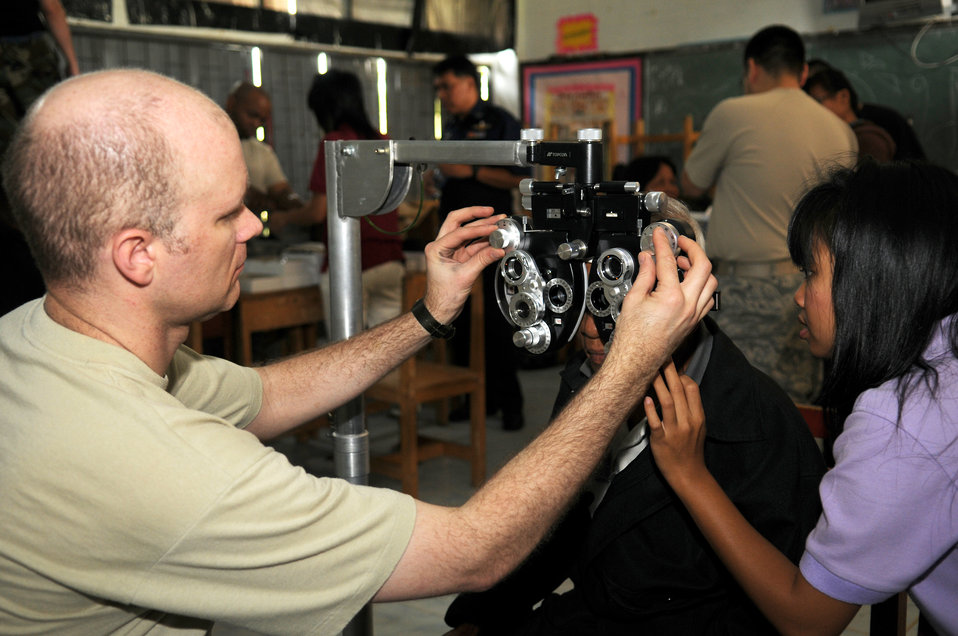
PACAF provides much needed dental and ophthalmologic care to underprivileged in Thailand.

Maj. David Koles checks a patient's eyesight during a joint and multinational humanitarian mission to provide much needed ophthalmologic care to Thailand's underprivileged during Cope Tiger 2009 on March 16. Cope Tiger is an annual exercise conducted in Thailand to improve combat readiness and combined and joint interoperability of U.S., Thai and Singaporean forces while enhancing regional security and providing humanitarian support. Major Koles is an Optometrist from the 35th Aerospace Medical Squadron, Misawa Air Base, Japan.